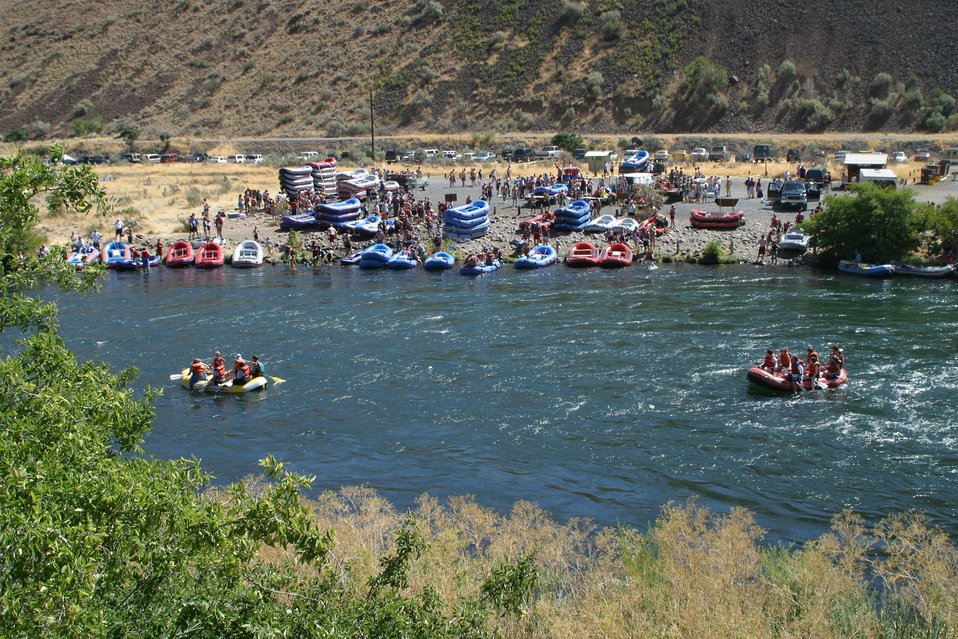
Over 200,000 people a year float the Lower Deshutes River.